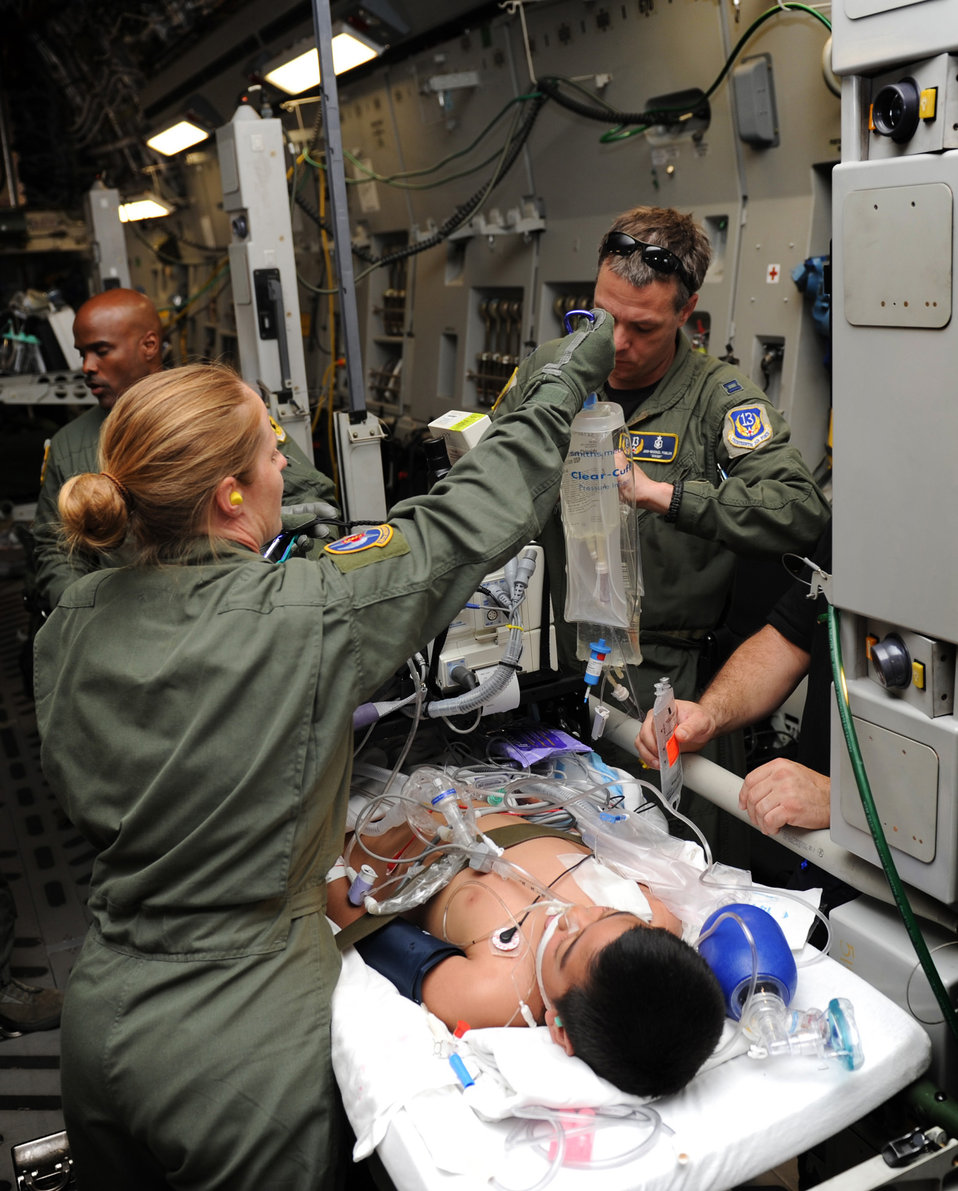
Life-saving mission

Master Sgt. Molly Quentin and Capt. John-Michael Fowler care for a critically ill patient on a medical evacuation mission May 22, 2011, from Pago Pago, American Samoa, to Tripler Army Medical Center, Hawaii. Sergeant Quentin is an aeromedical evacuation technician assigned to the 18th Aeromedical Evacuation Squadron Det. 1. Captain Fowler is a critical care air transport nurse with the 13th Air Force surgeon general's office.